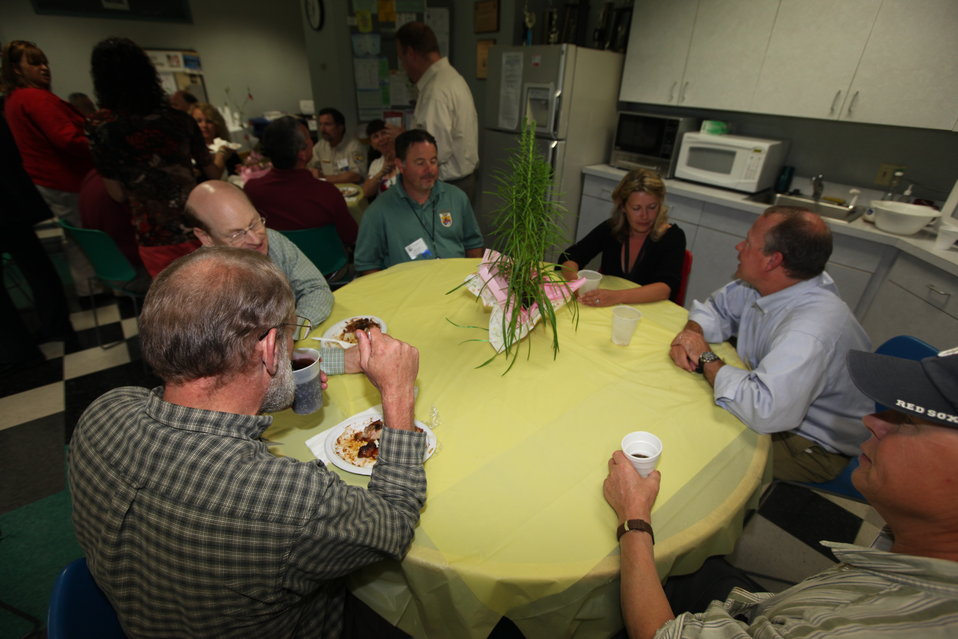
Northeast Region Employee Appreciation Awards

Luncheon